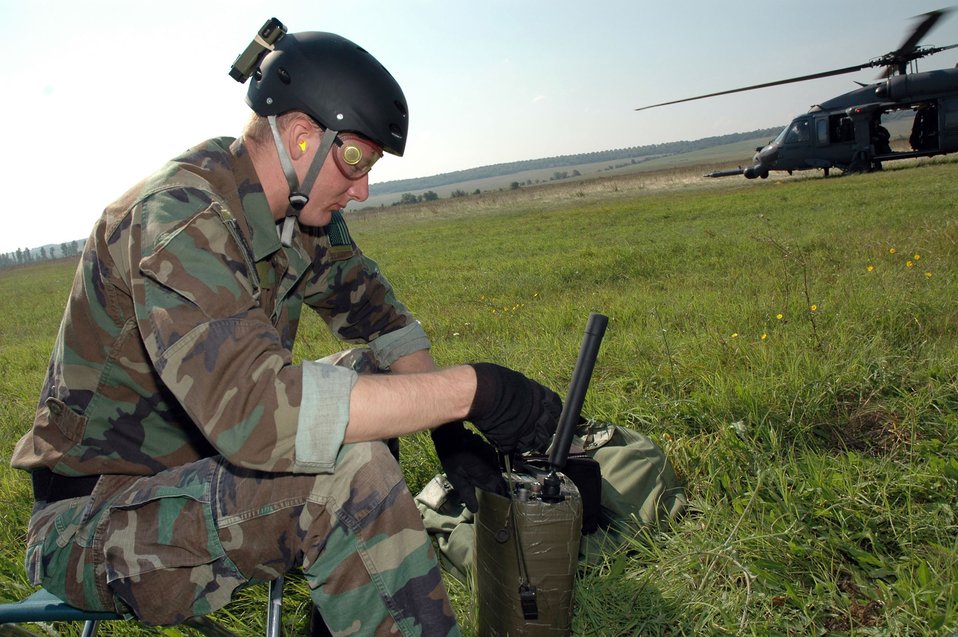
Rescue squad brings experience to Cooperative Key

PLOVDIV, Bulgaria -- Senior Airman Kristopher Abel sets up a radio while preparing a landing site for two other pararescuemen. He is one of about 50 56th Rescue Squadron Airmen from Naval Air Station Keflavik, Iceland, who are here for exercise Cooperative Key 05.